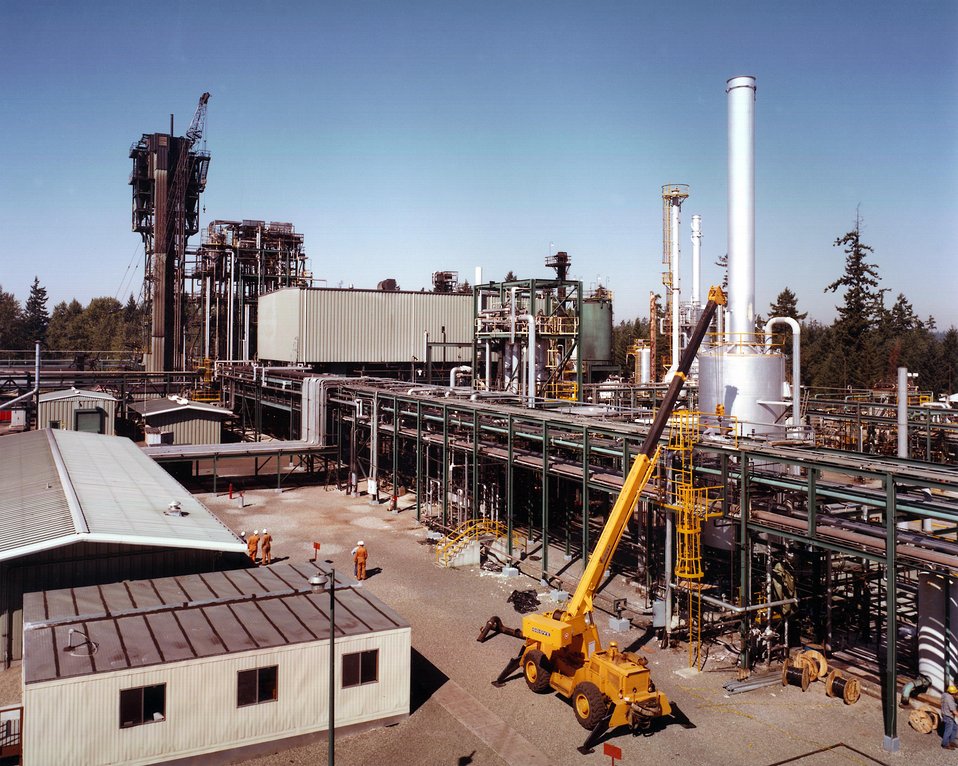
VIEW, RIGHT TO LEFT, OF PRE-HEATERS AND AREAS FOR HYDROGEN AND NITROGEN GENERATION, FILTRATION, AND FRACTIONATION.